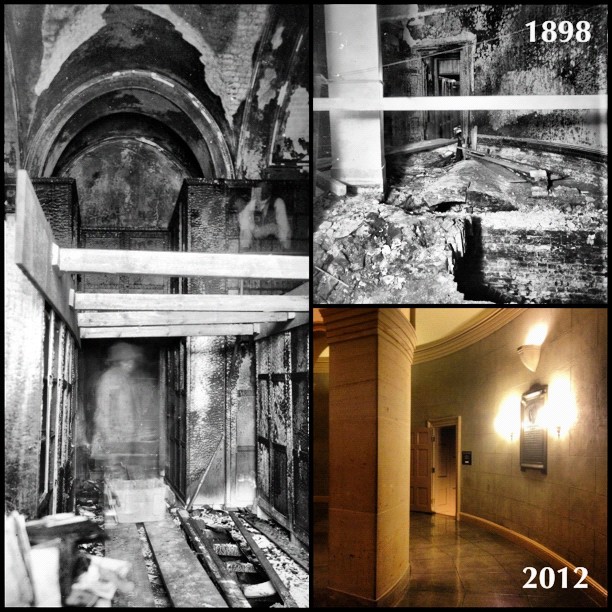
Capitol #onthisday 1898 gas explosion destroyed small Senate rotunda, no injuries.